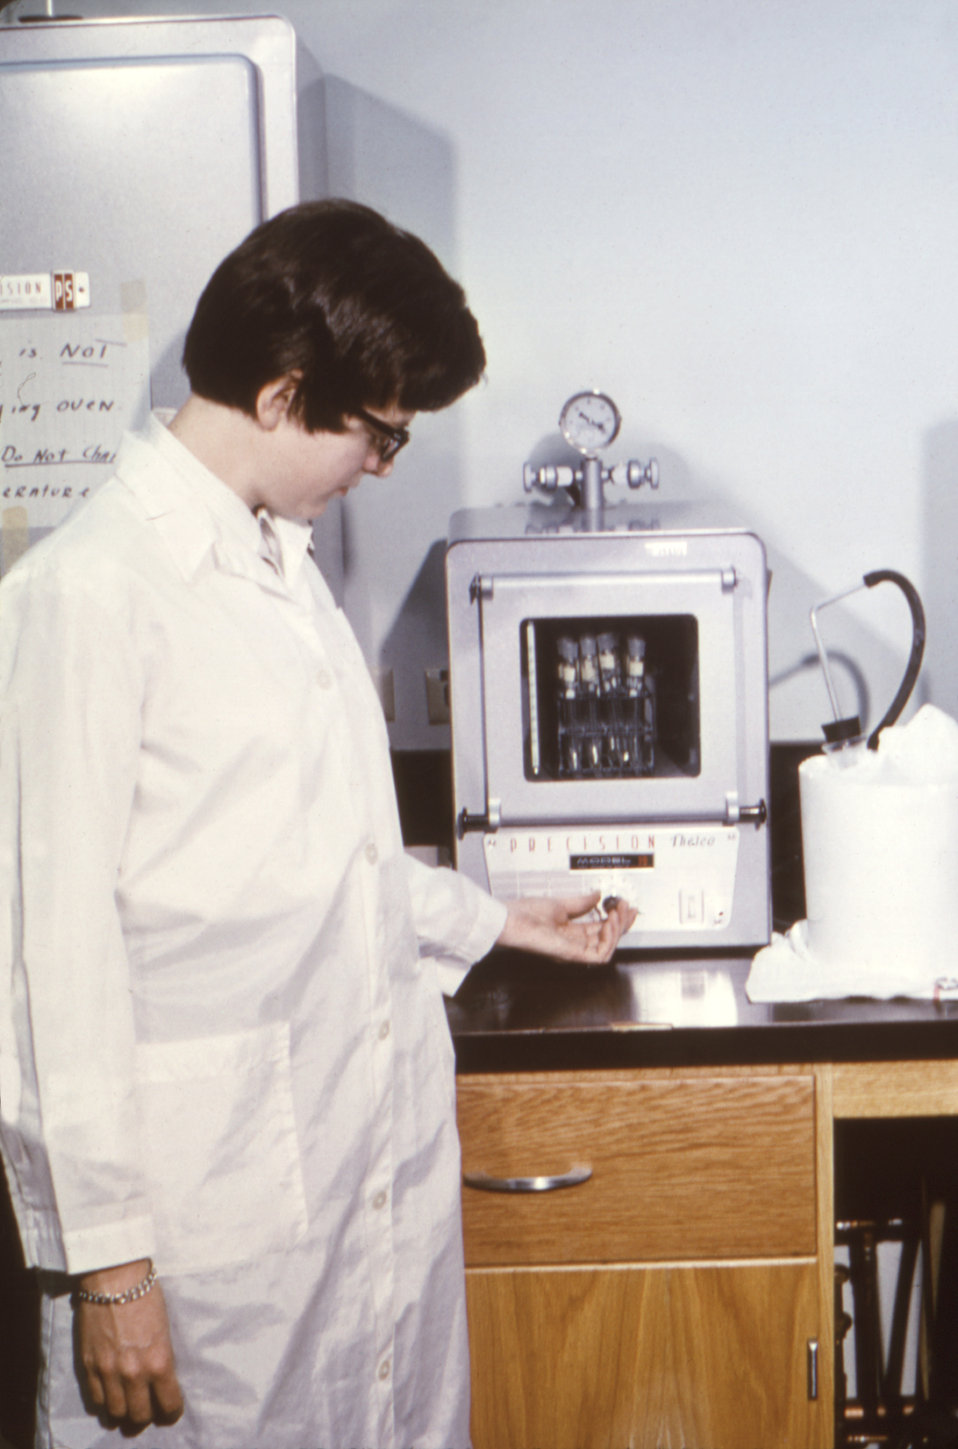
This historic 1965 image depicted a Centers for Disease Control's laboratory technician as she was conducting a cholesterol determination analysis by manual method.